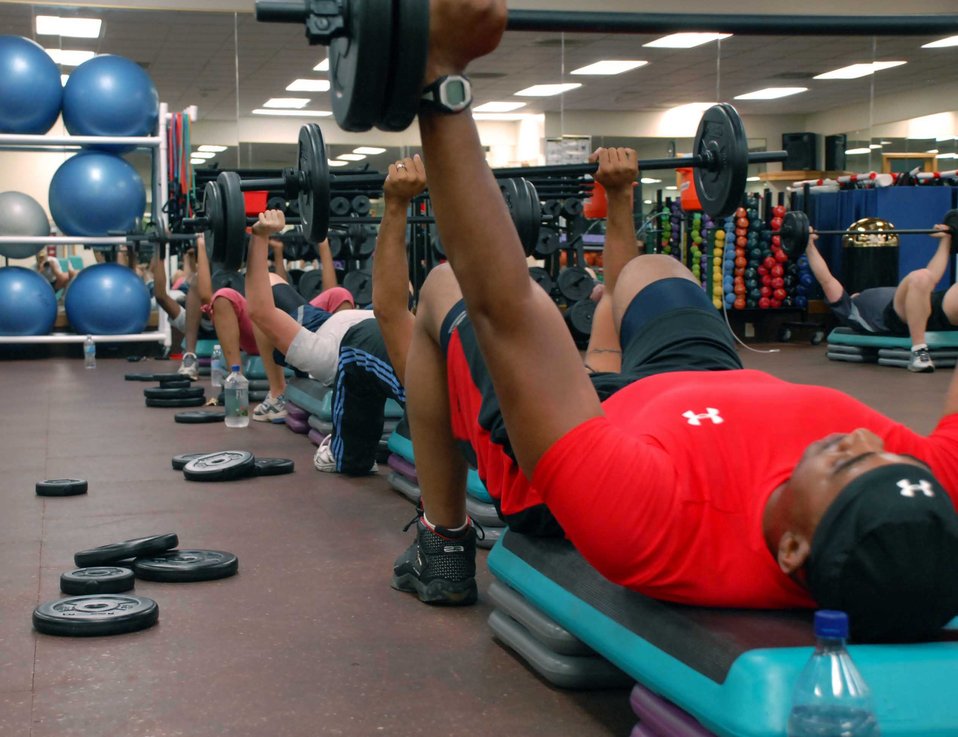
Beale AFB first to incorporate Body Pump in fitness program

Master Sgt. Keith Vernon, 9th Force Support Squadron, bench presses a barbell Aug. 17, 2009, at the Beale Air Force Base, Calif., fitness center. Sergeant Vernon is one of the certified instructors for the new Body Pump program recently implemented to promote fitness at Beale.